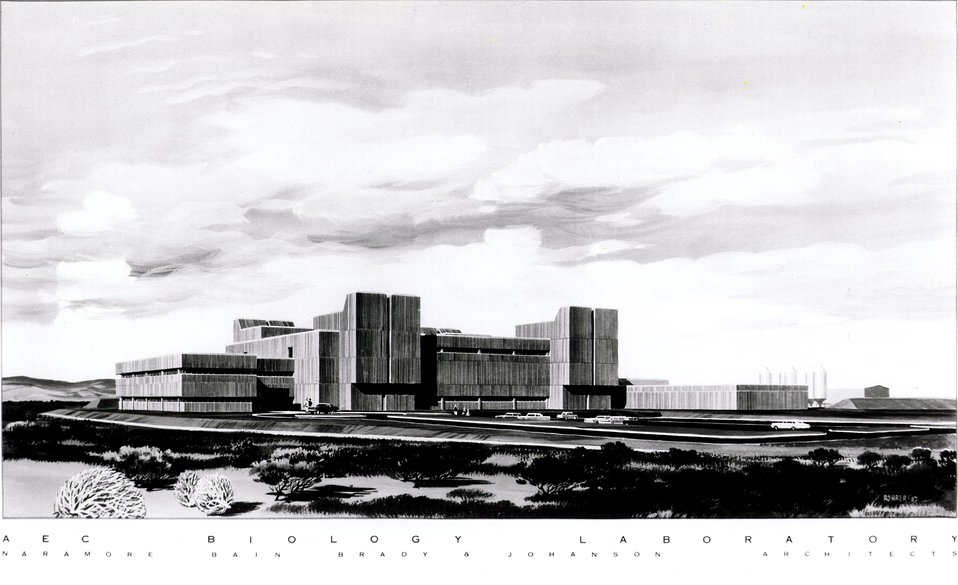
A new biology laboratory at Hanford Works, near Richland, Washington consolidates under one roof for biology and ecology research, The new biology laboratory is of reinforced concrete construction, with an area of 90,000 square feet, and has been erected at the main Pacific Norhtwest Laboratory site. Circa 1971.